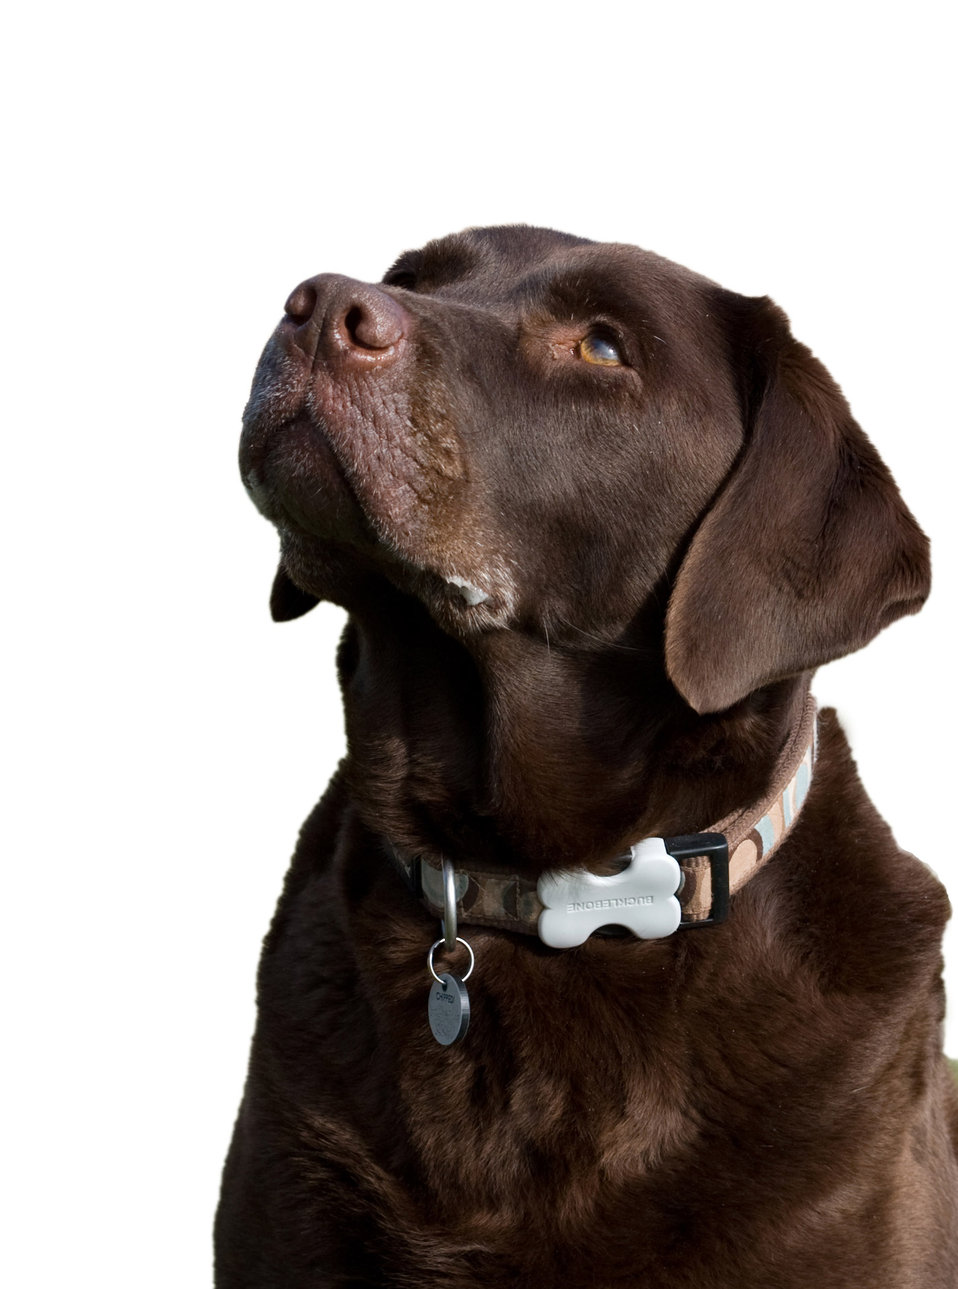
Labrador dog isolated

Chocolate brown labrador retriever dog isolated on white background.